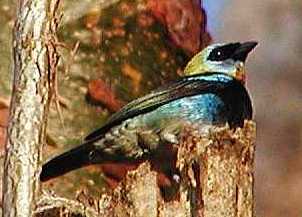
Golden-hooded Tanager in Panama